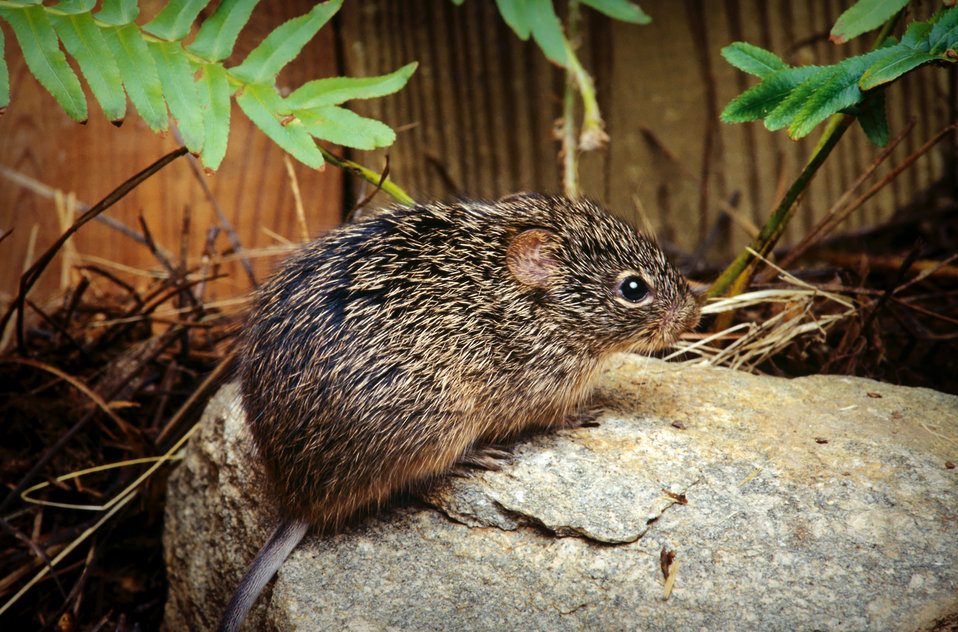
This photograph depicts a cotton rat, Sigmodon hispidus, whose habitat includes the southeastern United States, and way down into Central and South America. Its body is larger than the deer mouse, Peromyscus maniculatus, and measures about 5 - 7 inches, which includes the head and body; the tail measures an additional 3 - 4 inches. Its hair is longer and coarser than P. maniculatus, and is a grayish-brown color, sometimes grayish-black. The cotton rat prefers overgrown areas with shrubs and tall grasses.